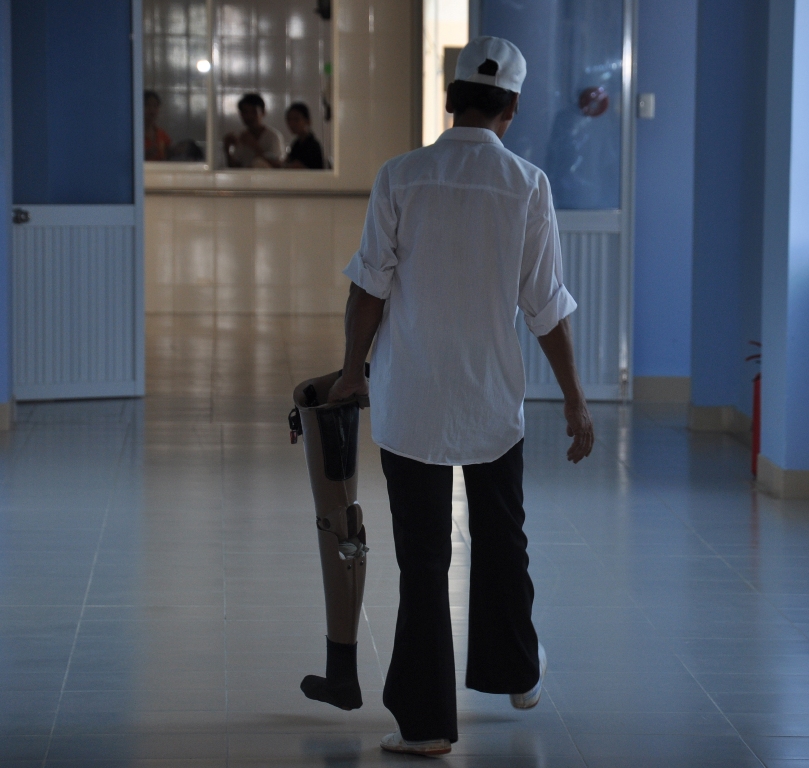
USAID assists persons with disabilities in Vietnam